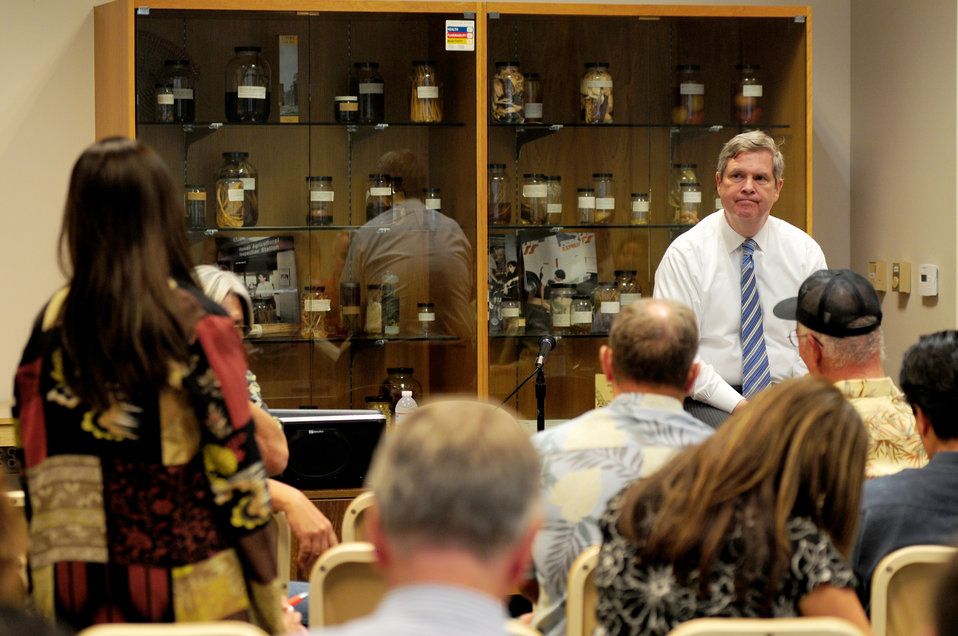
Agriculture Secretary Tom Vilsack takes a question at a stakeholder meeting at the Department of Agriculture State of Hawaii Plant Quarantine Building in Honolulu, Hawaii, on Tuesday, January 10, 2012, to discuss USDA programs, agricultural challenges in Hawaii, and alternative energy.